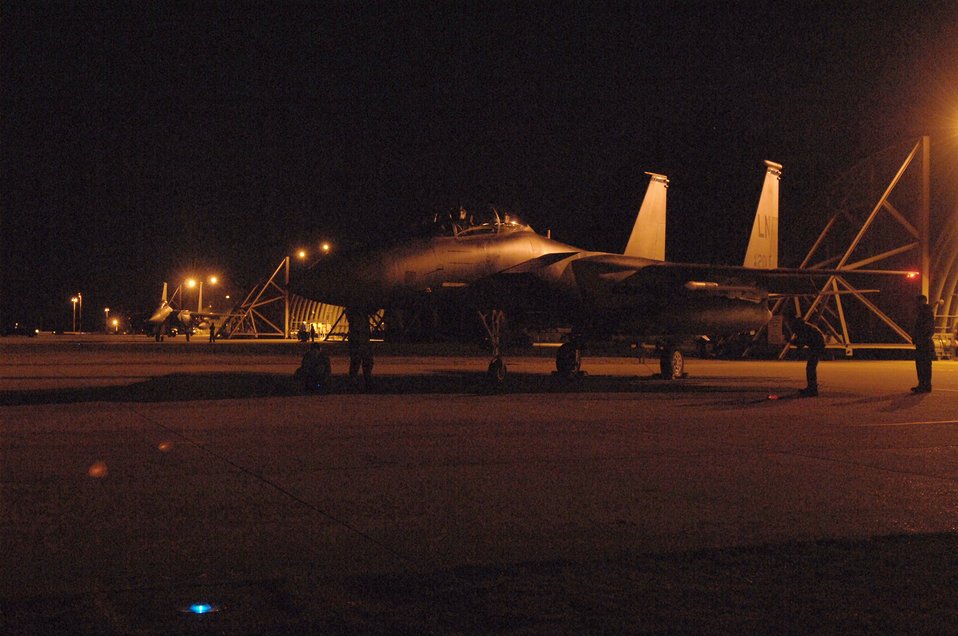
Odyssey Dawn

Crew chiefs for two F-15E Strike Eagles perform checks prior to their departure from RAF Lakenheath, England, March 19, 2011. Units from the 48th Fighter Wing are currently conducting pre-deployment procedures in support of Operation Odyssey Dawn. The 48th Fighter Wing provides all-weather, day or night air superiority and air-to-ground precision combat capability as well as combat search and rescue.